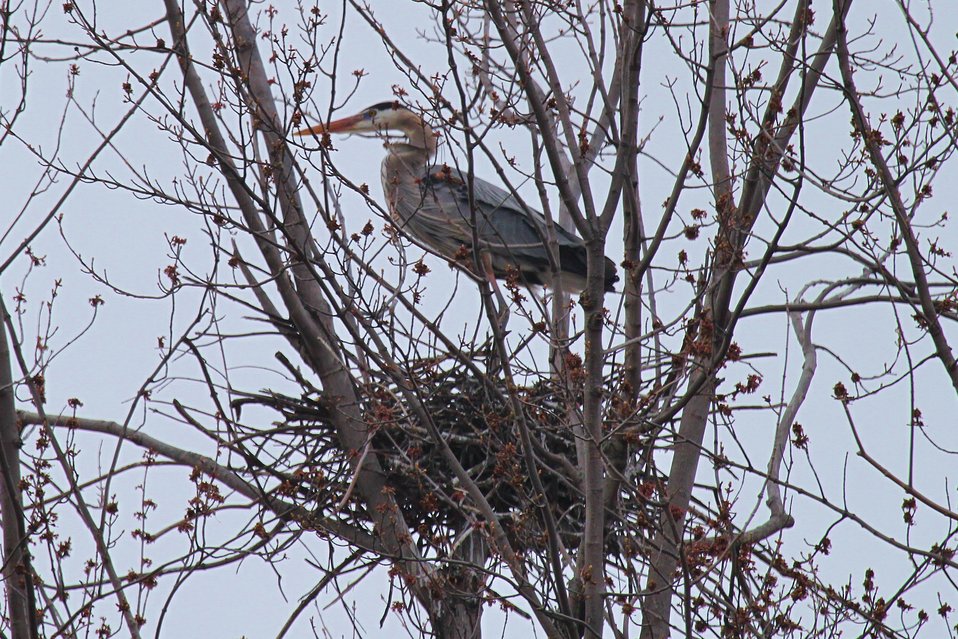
Great blue heron in nest

Missisquoi NWR protects one of the largest great blue heron rookeries on Lake Champlain, Vermont.